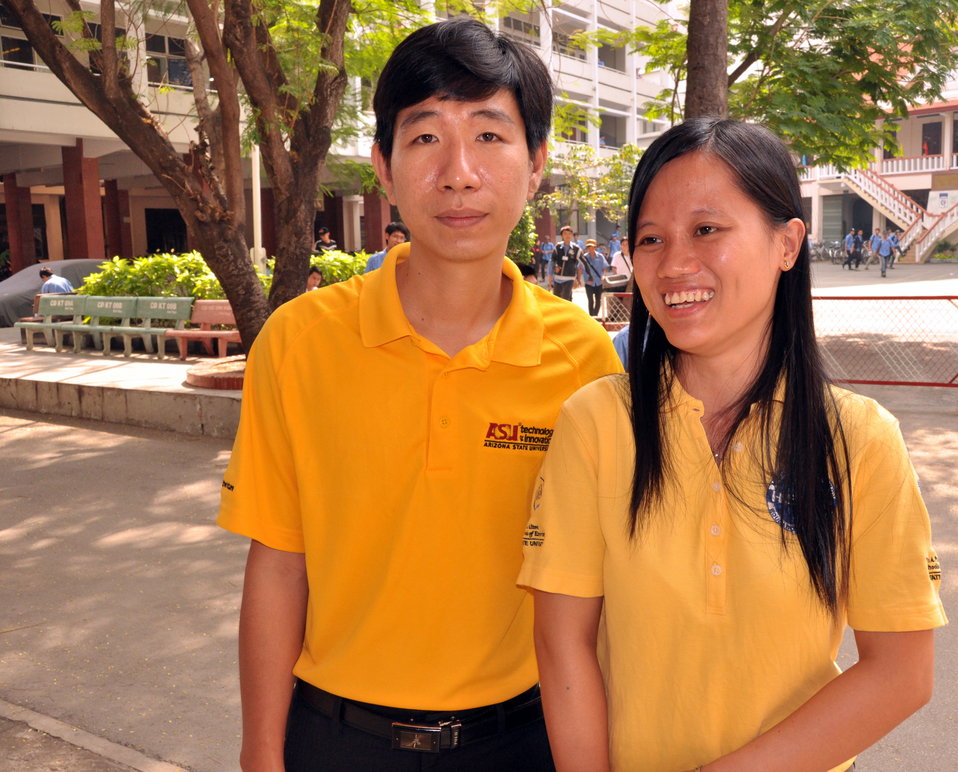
HEEAP Partner, Cao Thang Technical College

Nguyen Van Thong and Ta Ngoc Y Thien, two of the faculty trained under the USAID-supported HEEAP program
Ho Chi Minh City, January 12, 2013
Faculty trained with support of HEEAP
Ho Chi Minh City, January 12, 2013